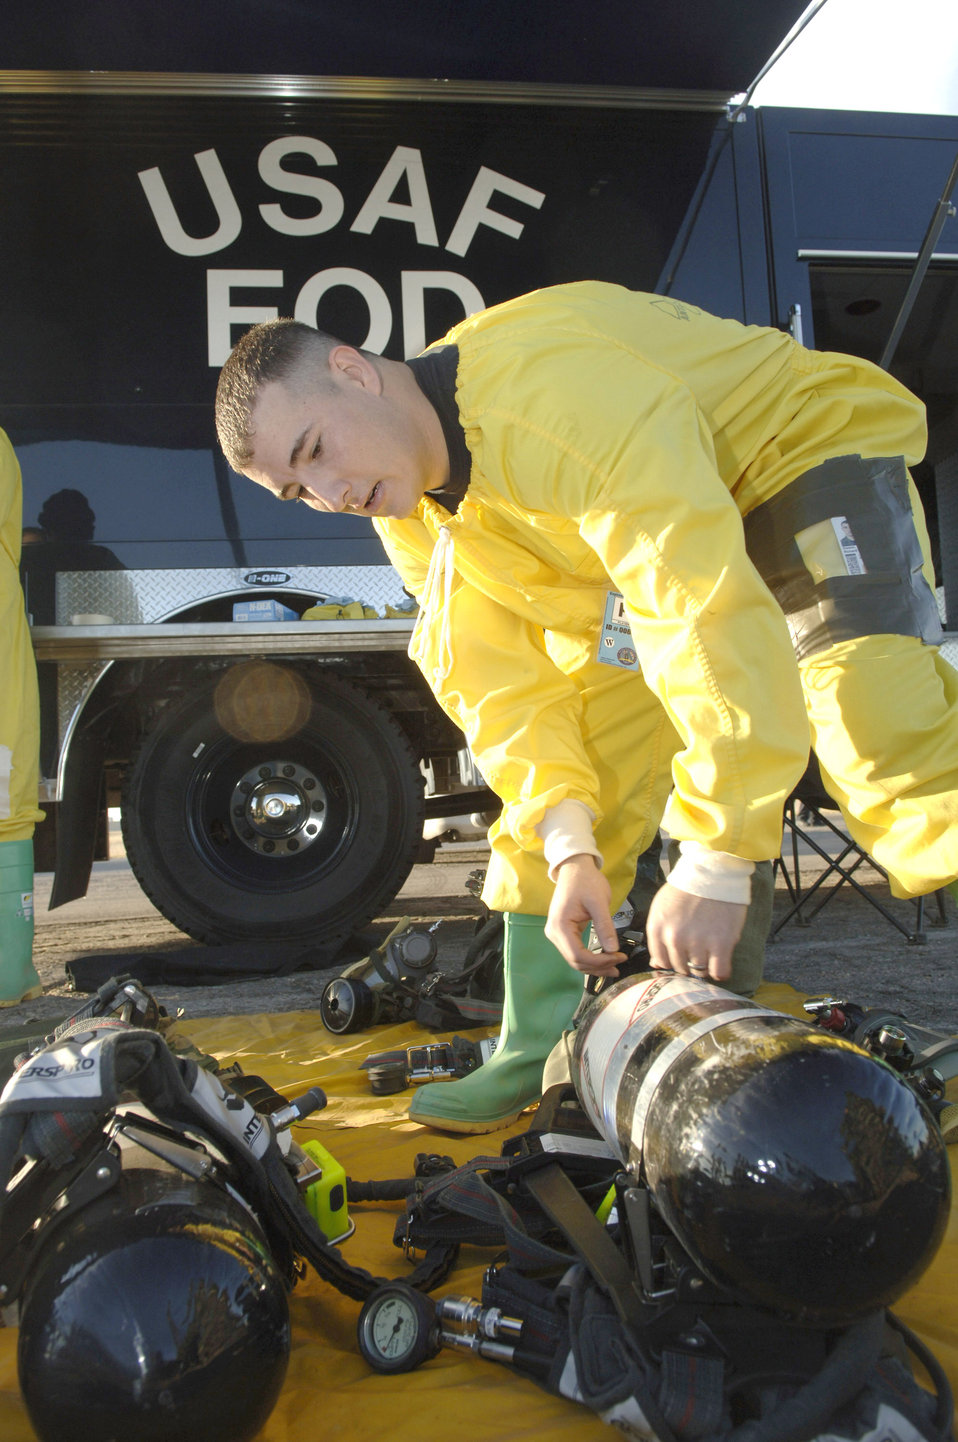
Vigilant Shield 07

Staff Sgt. Richard Swann checks equipment as part of initial setup entry procedures before searching the wreckage of a simulated aircraft accident Dec. 4 at Davis-Monthan Air Force Base, Ariz., during Vigilant Shield 07. Vigilant Shield 07 is a joint nuclear weapon accident exercise designed to train Department of Defense and federal agencies on response efforts as a cohesive team.